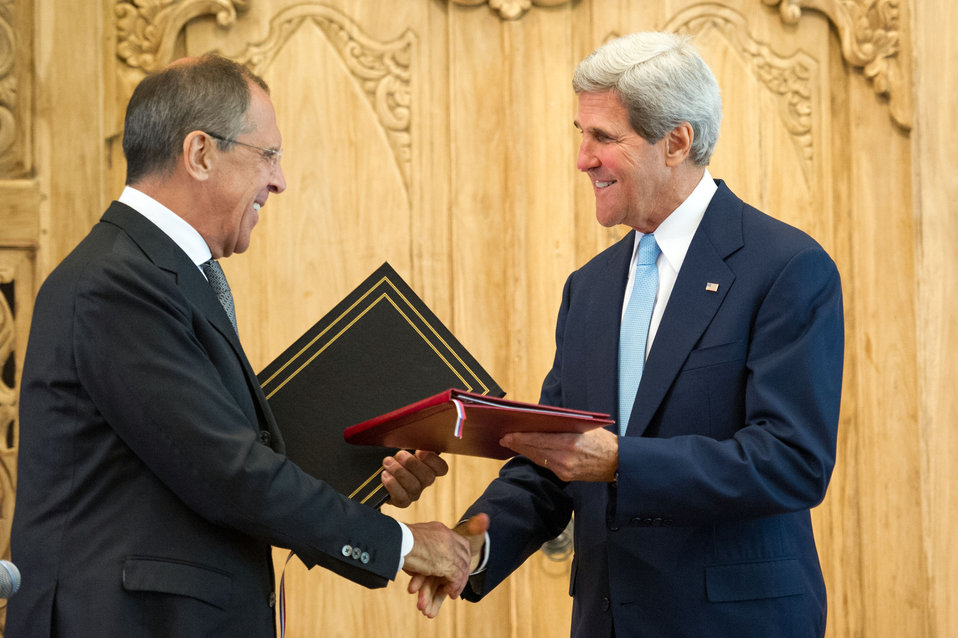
Secretary Kerry and Russian Foreign Minister Lavrov Shake Hands at the Nuclear Risk Reduction Centers Agreement Signing Ceremony

U.S. Secretary of State John Kerry, with Russian Foreign Minister Sergei Lavrov, signs the Nuclear Risk Reduction Centers Agreement in Bali, Indonesia, on October 7, 2013.